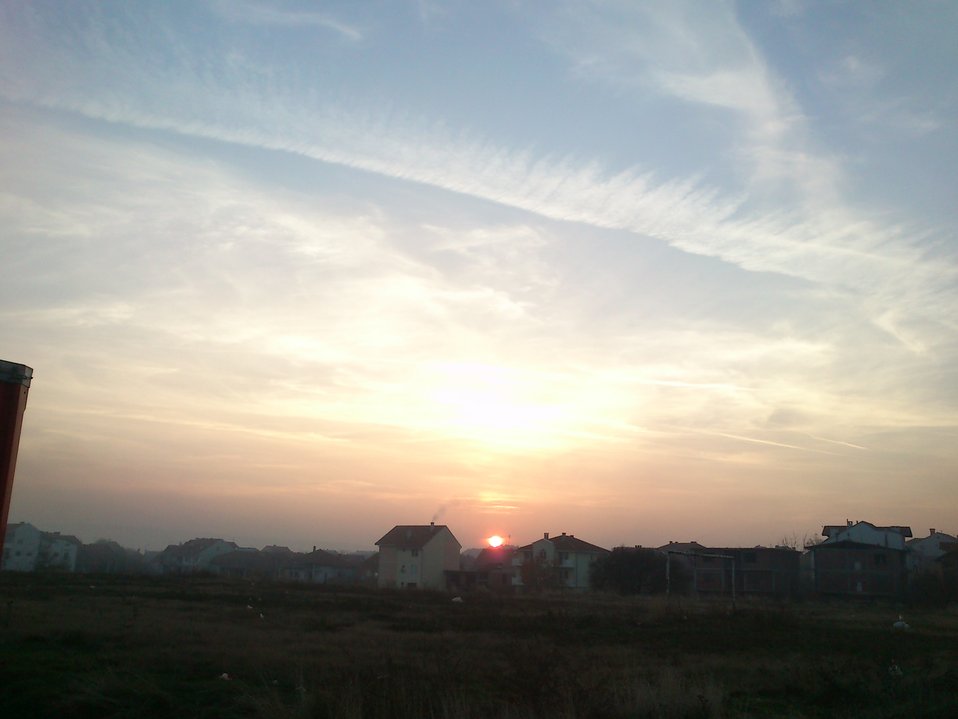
Српски / srpski: Zalazak sunca Donja vrezina
Лиценца Public domain Public domain false false I, the copyright holder of this work, release this work into the public domain. This applies worldwide.
In some countries this may not be legally possible; if so:
I grant anyone the right to use this work for any purpose, without any conditions, unless such conditions are required by law. Public domain Public domain false false